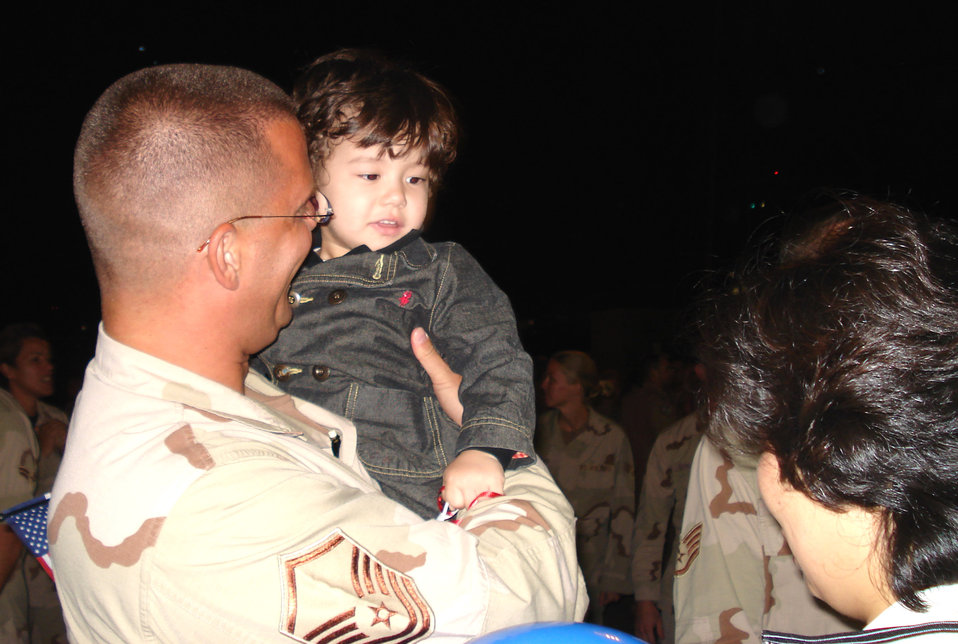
Spangdahlem Airmen return home

Master Sgt. Donald Villars greets his wife, Yong, and son, Daniel, upon his return to Spangdahlem Air Base, Germany, Sept. 9 from a deployment to Southwest Asia. He is assigned to the 52nd Aircraft Maintenance Squadron.